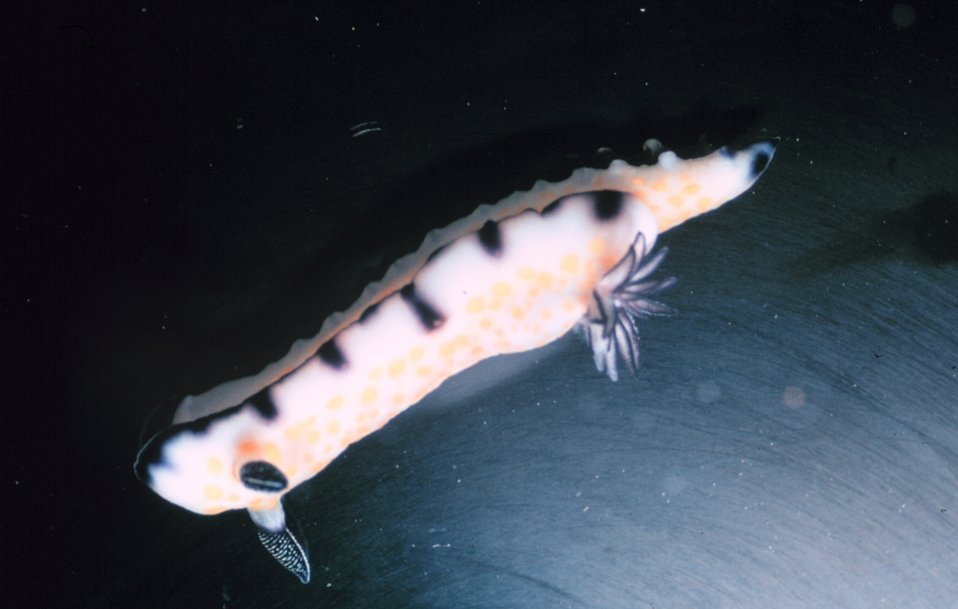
Nudibranch